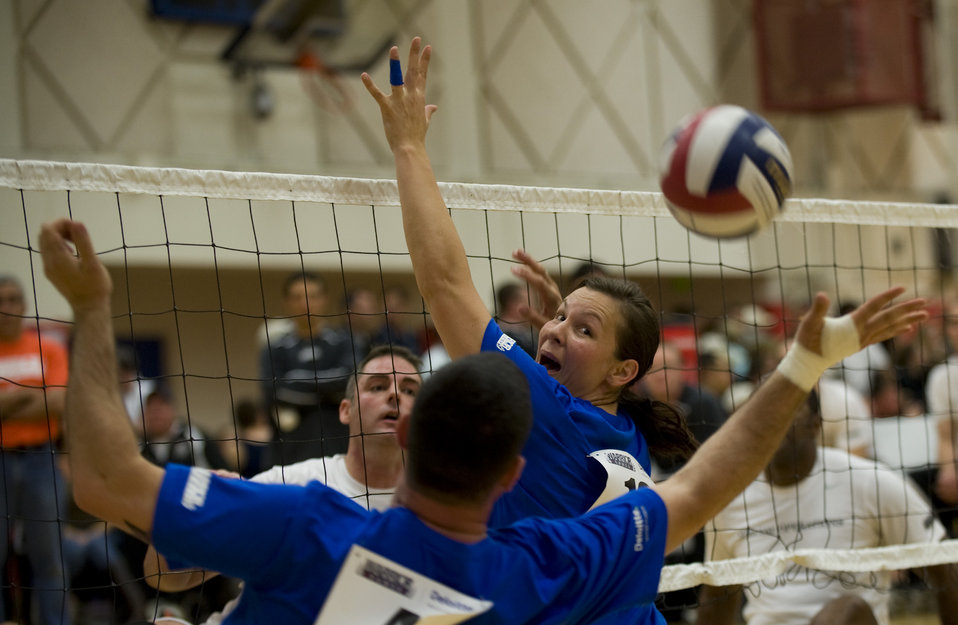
SOCOM defeats Air Force

Retired Staff Sgt. Stacy Pearsall looks back as volleyball slips past and is saved by Staff Sgt. Christopher D?Angelo during the 2011 Warrior Games in Colorado Springs, Colo., May 17. The Air Force played the U.S. Special Operations Command team, losing the series 2 games to 1.